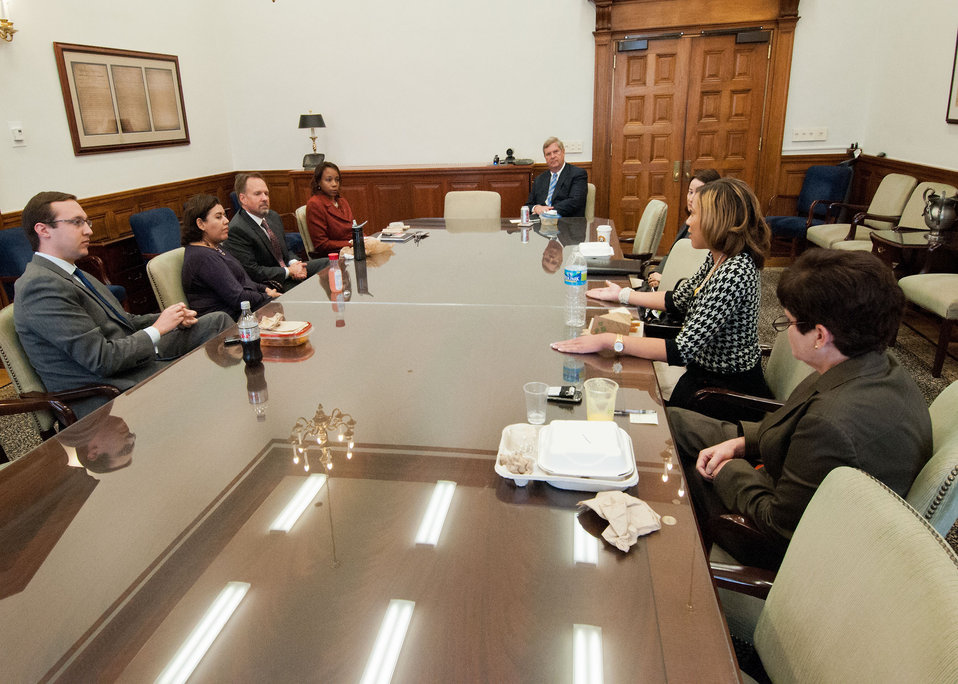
Agriculture Secretary Tom Vilsack meets with U.S. Department of Agriculture (USDA) employees for a Brown Bag lunch to gain information and knowledge to assist in the administration of the affairs and programs of the Department, and to thank the employees for their dedication and diligence in Washington, D.C. on Wednesday, Sept. 26, 2012. (L to R USDA Scheduling Deputy Director Toby Osherson, USDA Rural Development (RD) Senior Advisor Sylvia Bolivar, USDA Forest Service Fire and Aviation Management Deputy Director Robert Baird, USDA Chief Privacy Office Ravoyne Payton, Agriculture Secretary Tom Vilsack, USDA Rural Development (RD) Rural Utilities Service (RUS) Deputy Administrator Jessica Zufolo, USDA Agriculture Research Service (ARS) Program Analyst Tracy Troutman, and USDA Chief of Staff Krystal Hardin).